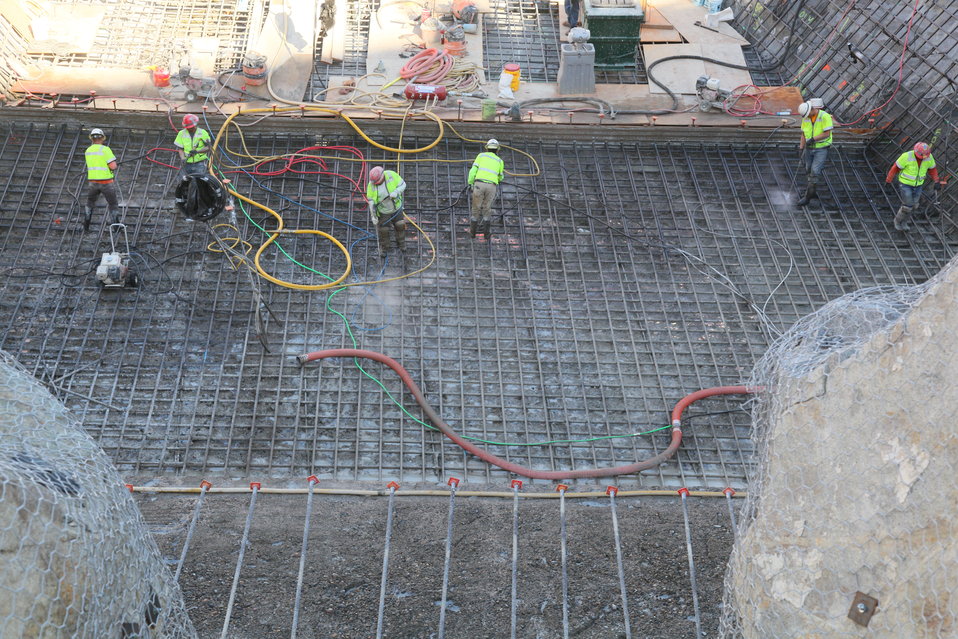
Rebar, Concrete Cooling and GPS

Contractors for the U.S. Army Corps of Engineers Sacramento District use power wash tools in preparation for concrete placement for the auxiliary spillway at the Folsom Dam Joint Federal Project in Folsom, Calif., June 20, 2012. The project is a joint effort of the Corps, U.S. Bureau of Reclamation, the Central Valley Flood Protection Board and the Sacramento Area Flood Control Agency to improve the safety of the current dam and reduce flood risk for the greater Sacramento area.